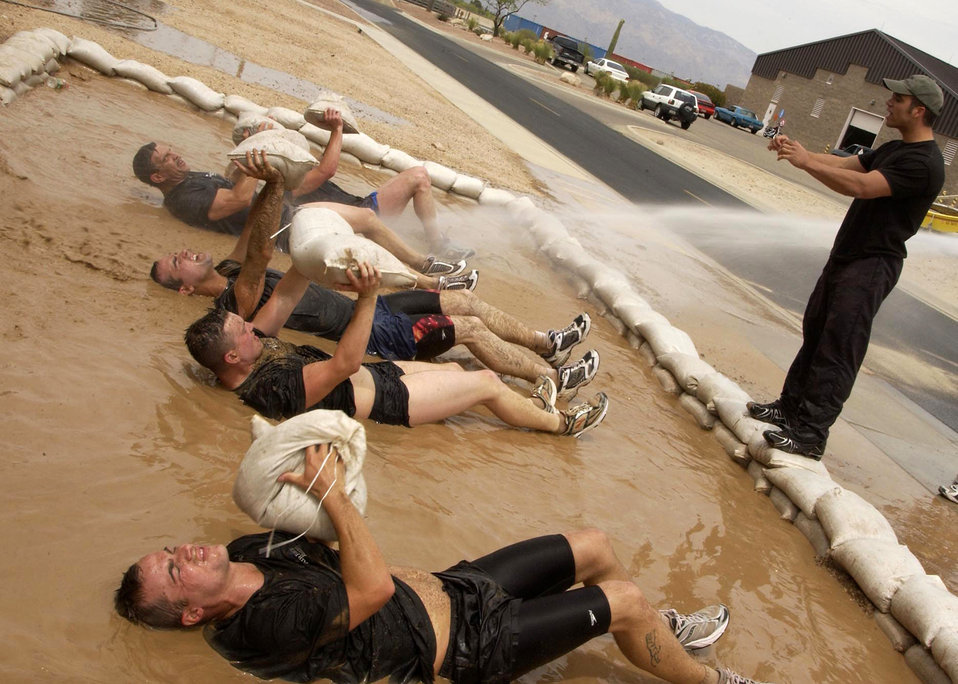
PJ selection process

Tech. Sgt. Isaiah Staley challenges applicants during the 306th Rescue Squadron pararescue screening Friday, April 21, 2006, at Davis-Monthan Air Force Base, Ariz. Applicants must pass a timed 3-mile run, 1,500-meter swim, calisthenics and other tasks before proceeding to the 10-week indoctrination course at Lackland AFB, Texas. Sergeant Staley is a pararescueman with the 306th.